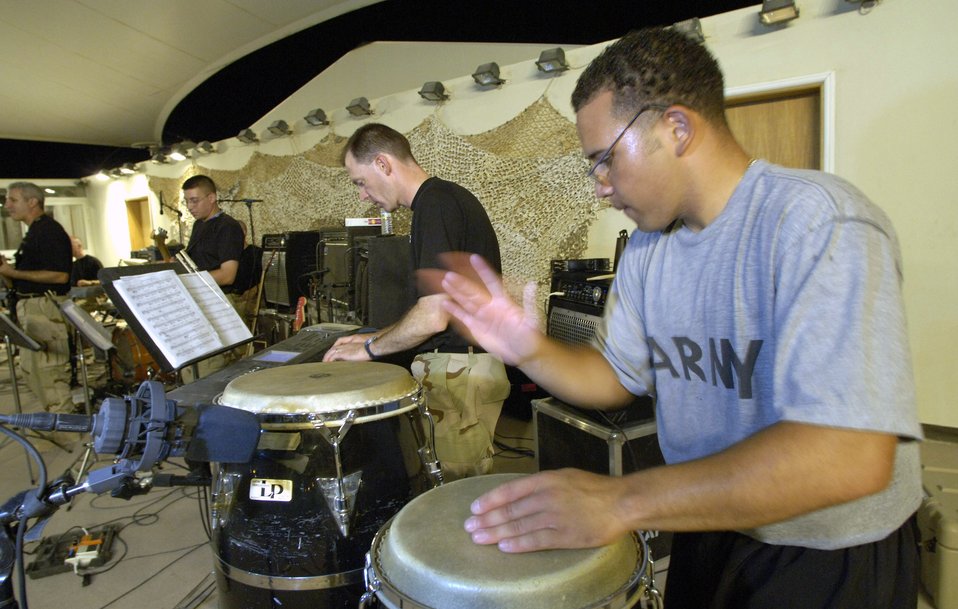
Expeditionary band performs for troops in Southwest Asia

U.S. Army Spec. Jose Feurtado (right) sits in with the band. Two U.S. Central Air Forces expeditionary bands that debuted under their new names